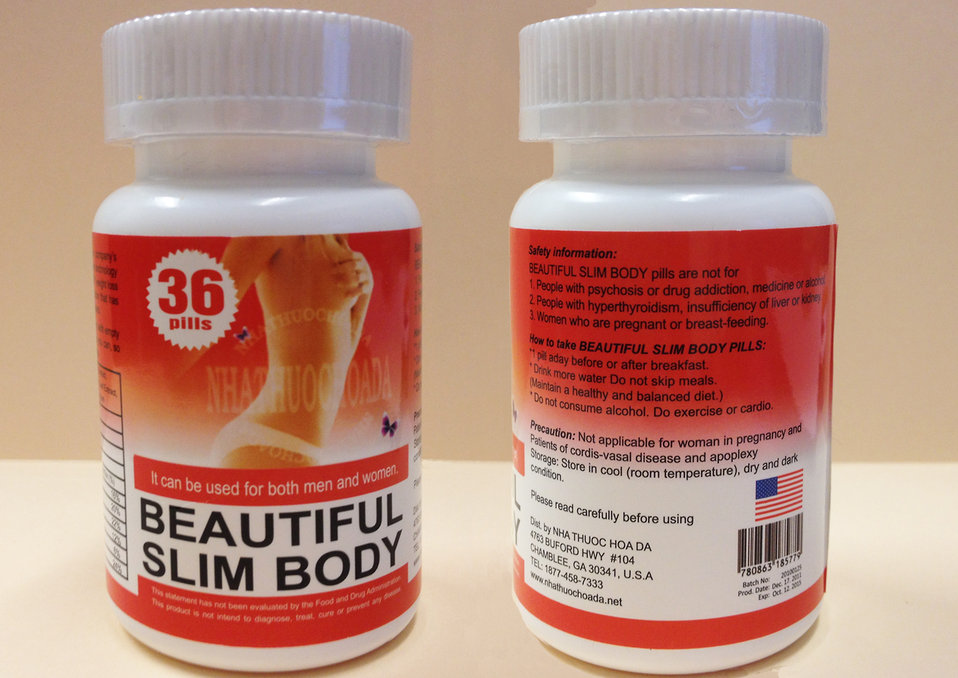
Beautiful Slim Body

November 8, 2012 - The FDA is advising consumers not to purchase or use 'Beautiful Slim Body,' a product promoted and sold for weight loss. The product was found to contain undeclared sibutramine. For more information, go to www.fda.gov/Drugs/ResourcesForYou/Consumers/BuyingUsingMe...

And read this Consumer Update: Beware of Fraudulent ‘Dietary Supplements’